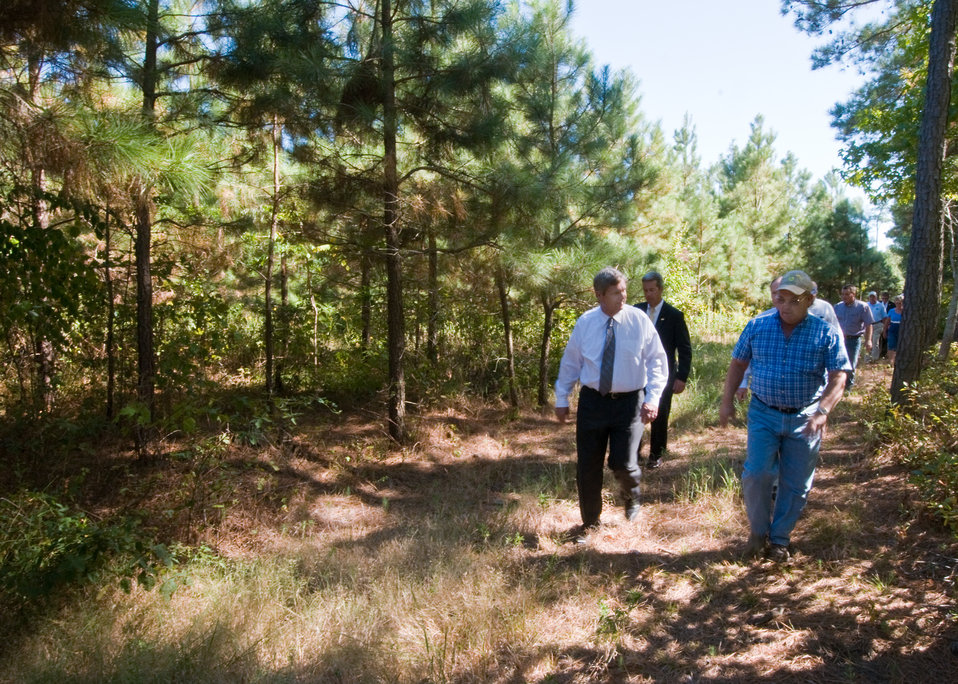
Agriculture Secretary Tom Vilsack (left) and Lin Spicer (right), Holly Lane farms, Church Creek, Maryland, tour a section of Spicer’s approximately 200 hundred-acre timber portion of his farm. Spicer has participated in the Natural Resources and Conservation Service Pine Release (aerial spraying) conservation practice available through the Environmental Quality Incentive Program (EQUIP.)
Secretary Vislack visited Holly Lanes Farms while on a tour of the Eastern Shore of Maryland, Monday, September 20, 2010 to speak to rural communities, farmers and watermen to discuss conservation programs administered by the Department of Agriculture that are available to help improve the water quality of the Chesapeake Bay. USDA Photo 10di1497-25 by Bob Nichols.